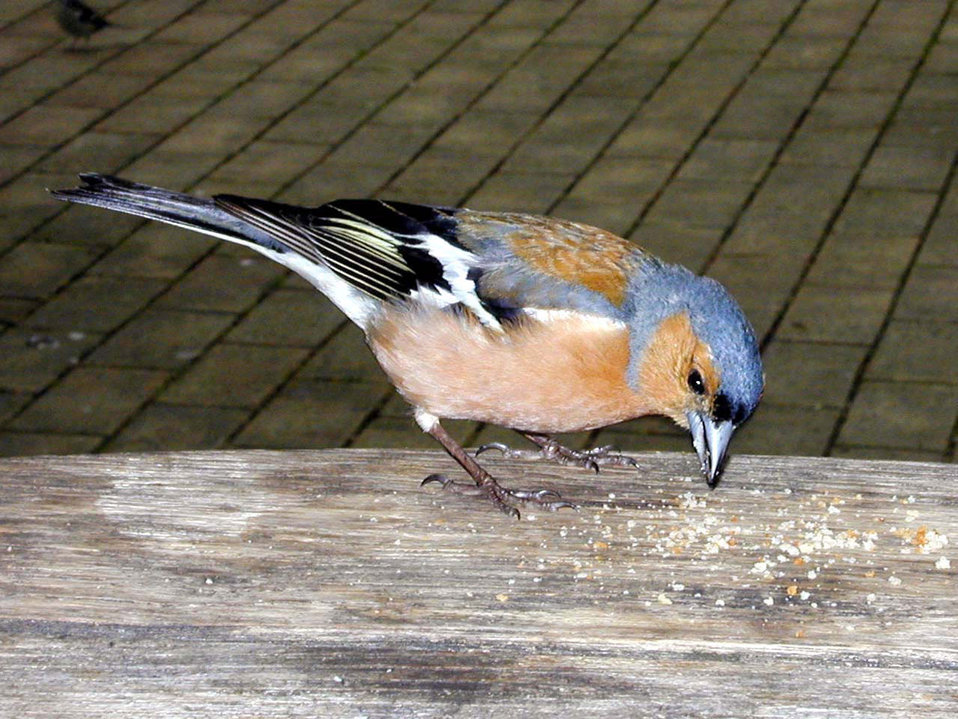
Chaffinch on table eating cake crumbs.